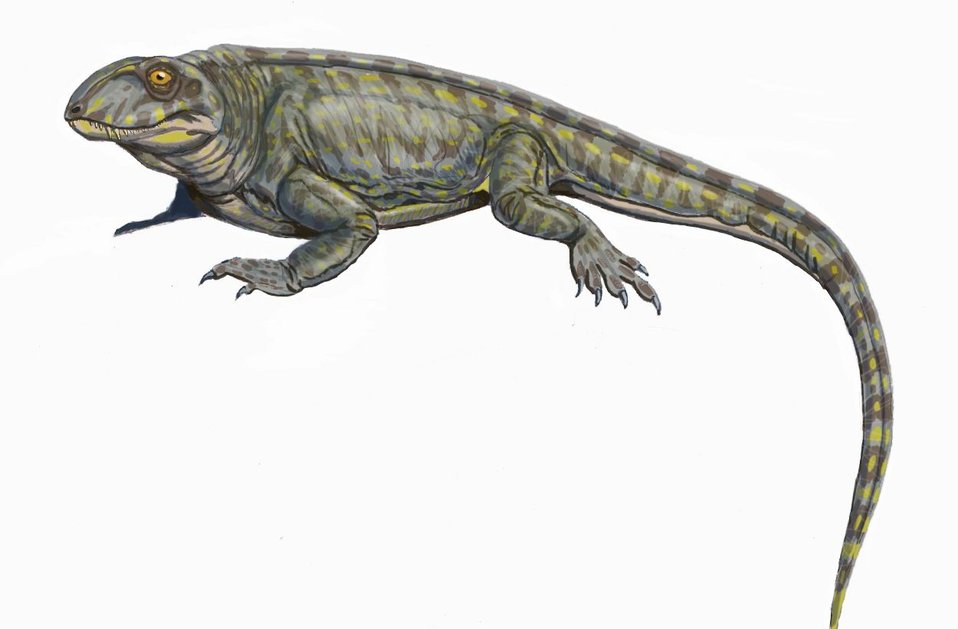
Italiano: Ricostruzione di Palaeohatteria. Русский: Хаптодус-палеогаттерия. Палеогаттерия.